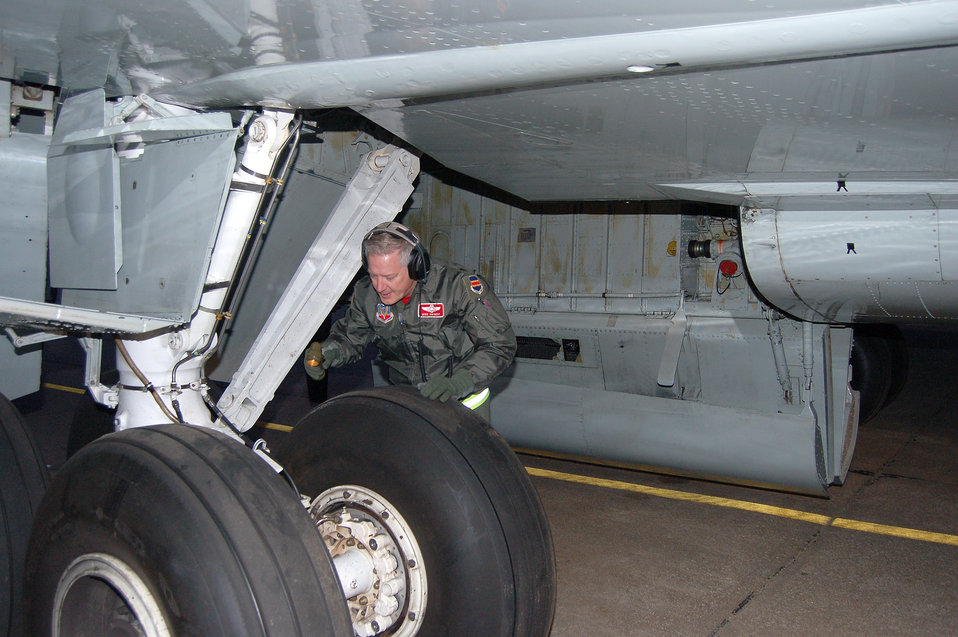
55th Wing fulfills mission tasks from borrowed airfield

Lt. Col. Michael Swigert inspects the underside of an RC-135V/W Rivet Joint reconnaissance aircraft prior to a training mission at Lincoln Air Park in Lincoln, Neb., Sept. 29. He is an aircraft commander and instructor with the 343rd Reconnaissance Squadron at Offutt Air Force Base, Neb. Base aircraft and support units are temporarily operating from the air park ramp while the base's runway is under repair.